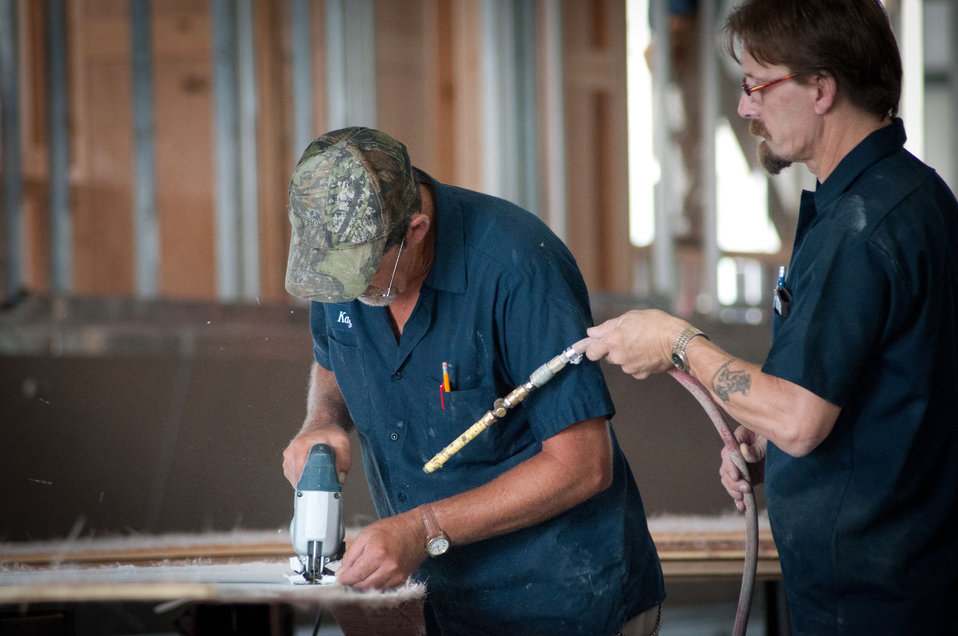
Stardust Industries is using it's expertise in luxury house boats to help retool and redirect Monticello, Kentucky’s houseboat manufacturing industry on Wednesday, July 13, 2011 The houseboat industry has been decimated because of the struggling economy – by using its facilities and manpower to create low-cost housing that is energy efficient. Rural Development obligated $499,000 in Rural Business Enterprise Grant funds to support this unique endeavor. Up until a few years ago, there were several successful houseboat manufacturers in the four-county area surrounding the city of Somerset. Most have now ceased operation or drastically reduced output, which has led to dramatic, long-term job loss. These new energy efficient homes will be constructed in redesigned, refitted houseboat factories using local workers that have been retrained.